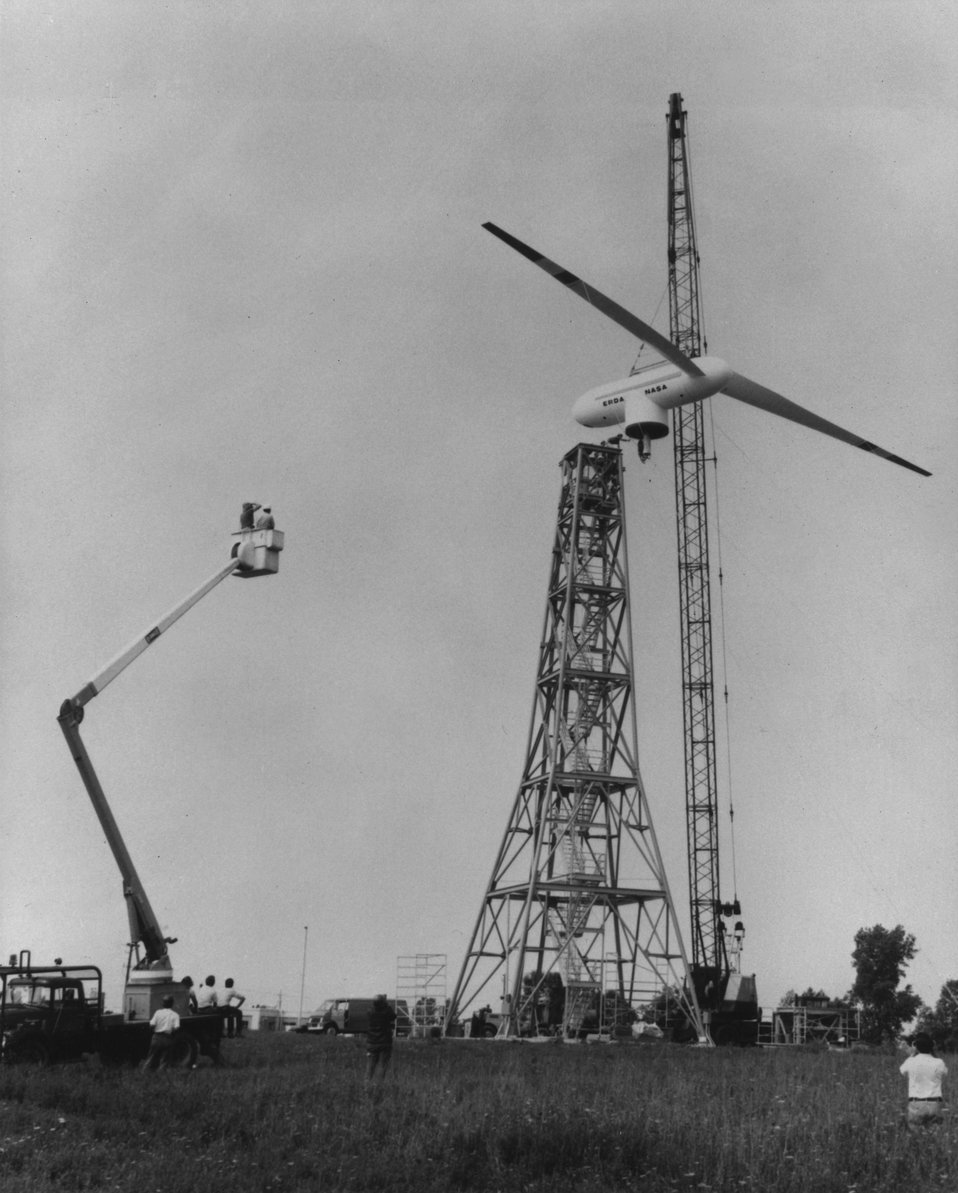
A 125-foot-tall windmill has been developed for the U.S. Department of Energy (DOE) by NASA's Lewis Research Center in Cleveland, Ohio. c. 1975